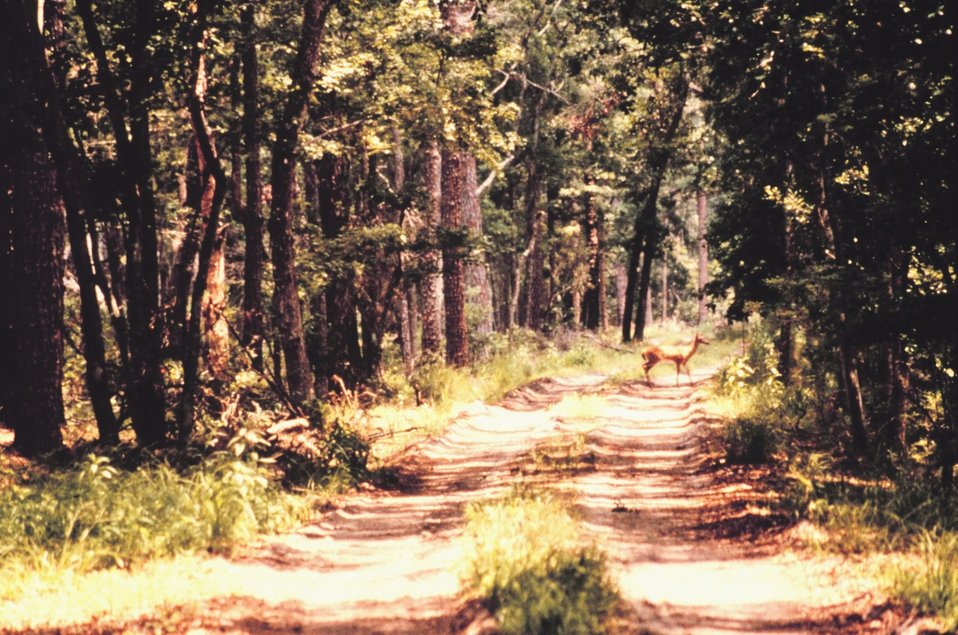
A white tail deer amidst the pine and oak of the maritime forest.